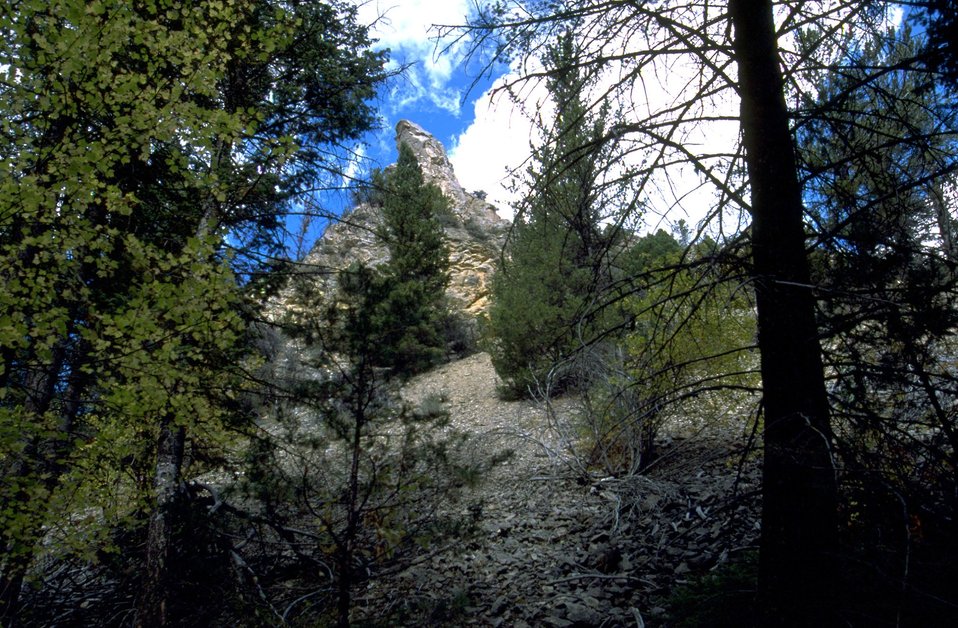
Looking up a steep, rocky slope in the Centennial Mountains